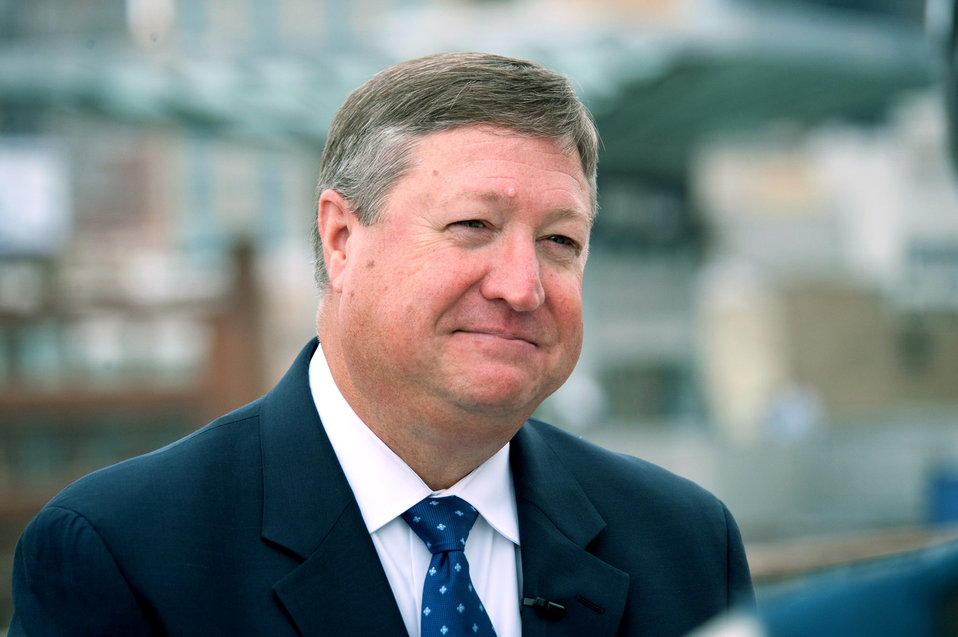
SecAF speaks at AF Week New York City

Secretary of the Air Force Michael Donley participates in the Air Force Week New York City proclamation ceremony on the USS Intrepid Sea, Air and Space Museum Aug. 24, 2010. The event was highlighted by a six-ship flyover by the Air Force aerial demonstration team, the Thunderbirds.